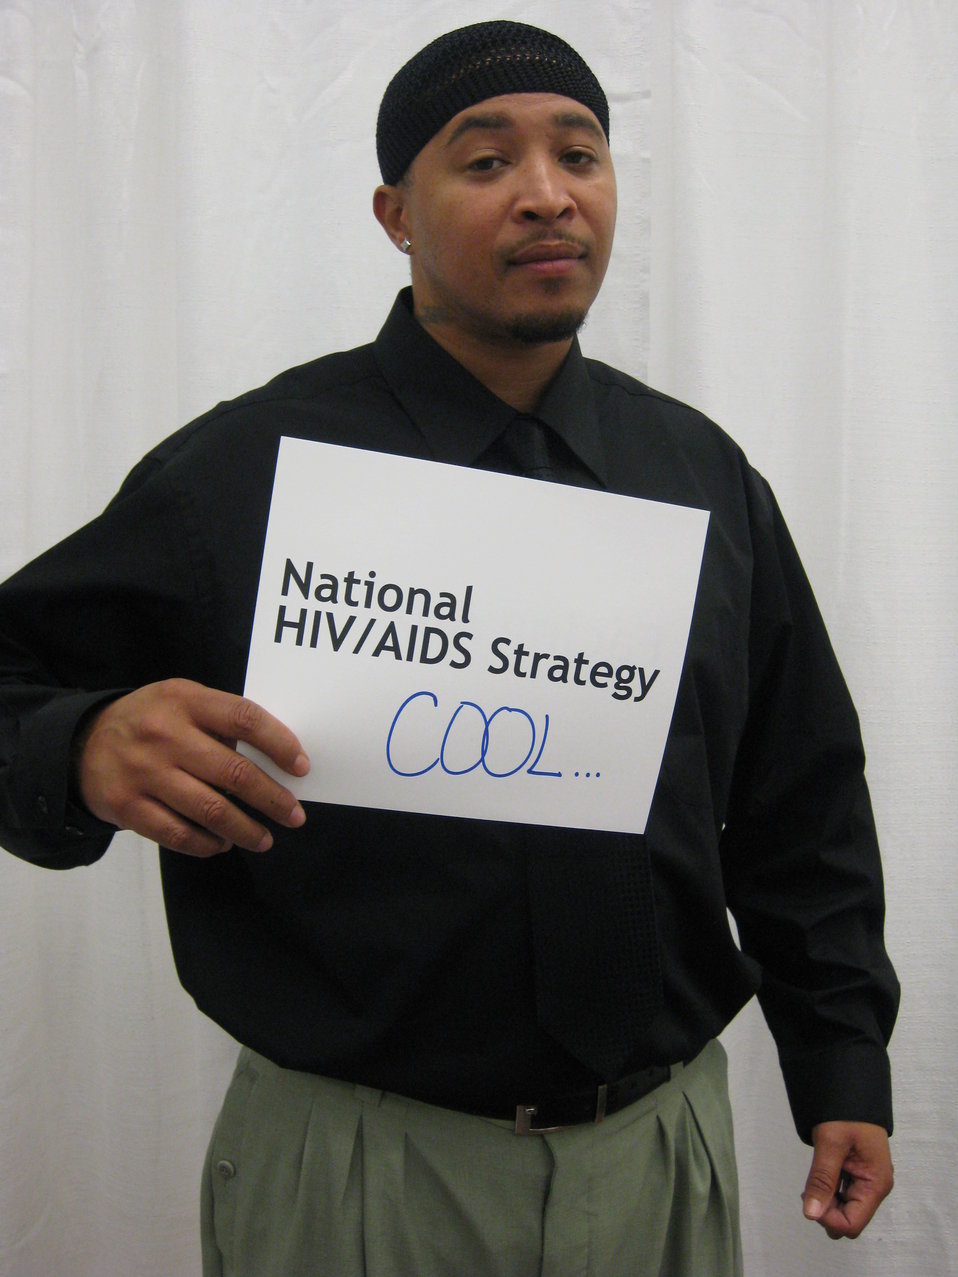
National HIV/AIDS Strategy COOL...

FACING AIDS at the HIV Prevention Leadership Summit 2010 in Washington, DC.